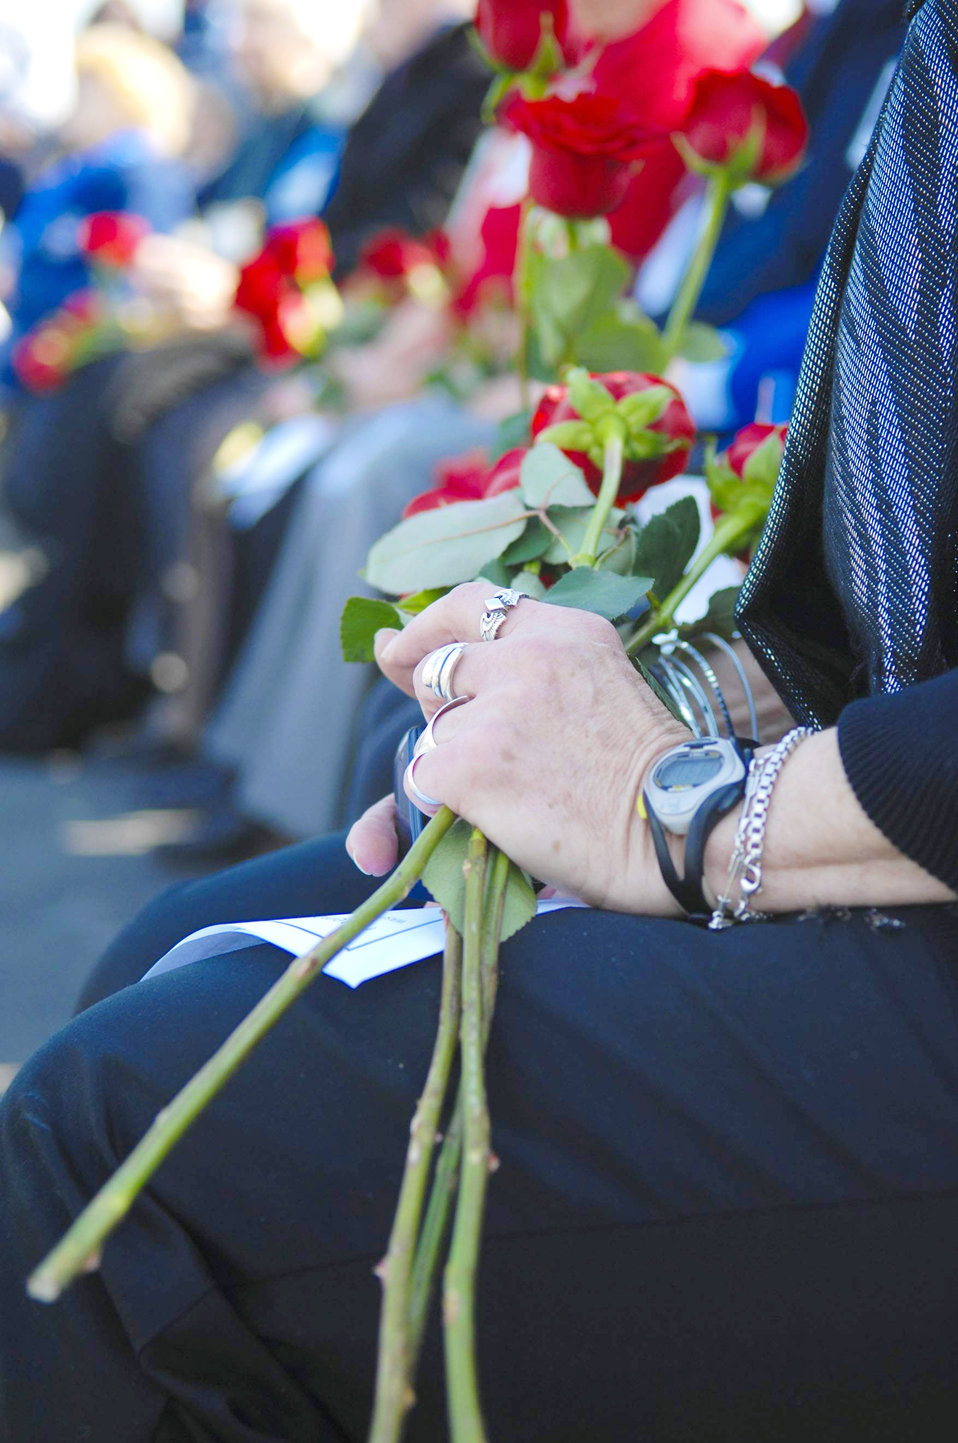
Female World War II pilots lay wreath at Air Force Memorial

A family member of a Women Airforce Service Pilot clutches roses that represent a WASP pilot who has passed away during a ceremony March 9, 2010 in Arlington, Va.